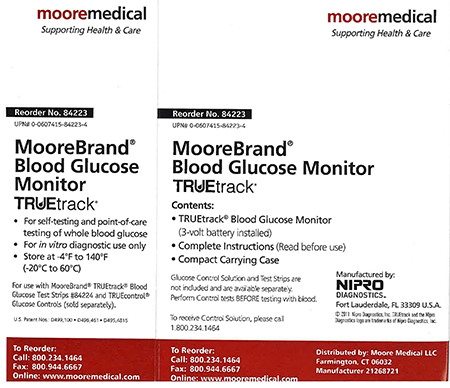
RECALLED – Blood Glucose Meters

January 2, 2014 – Product Recall – Nipro Diagnostics, Inc. Initiates Voluntary Recall of Certain TRUEbalance and TRUEtrack Blood Glucose Meters.